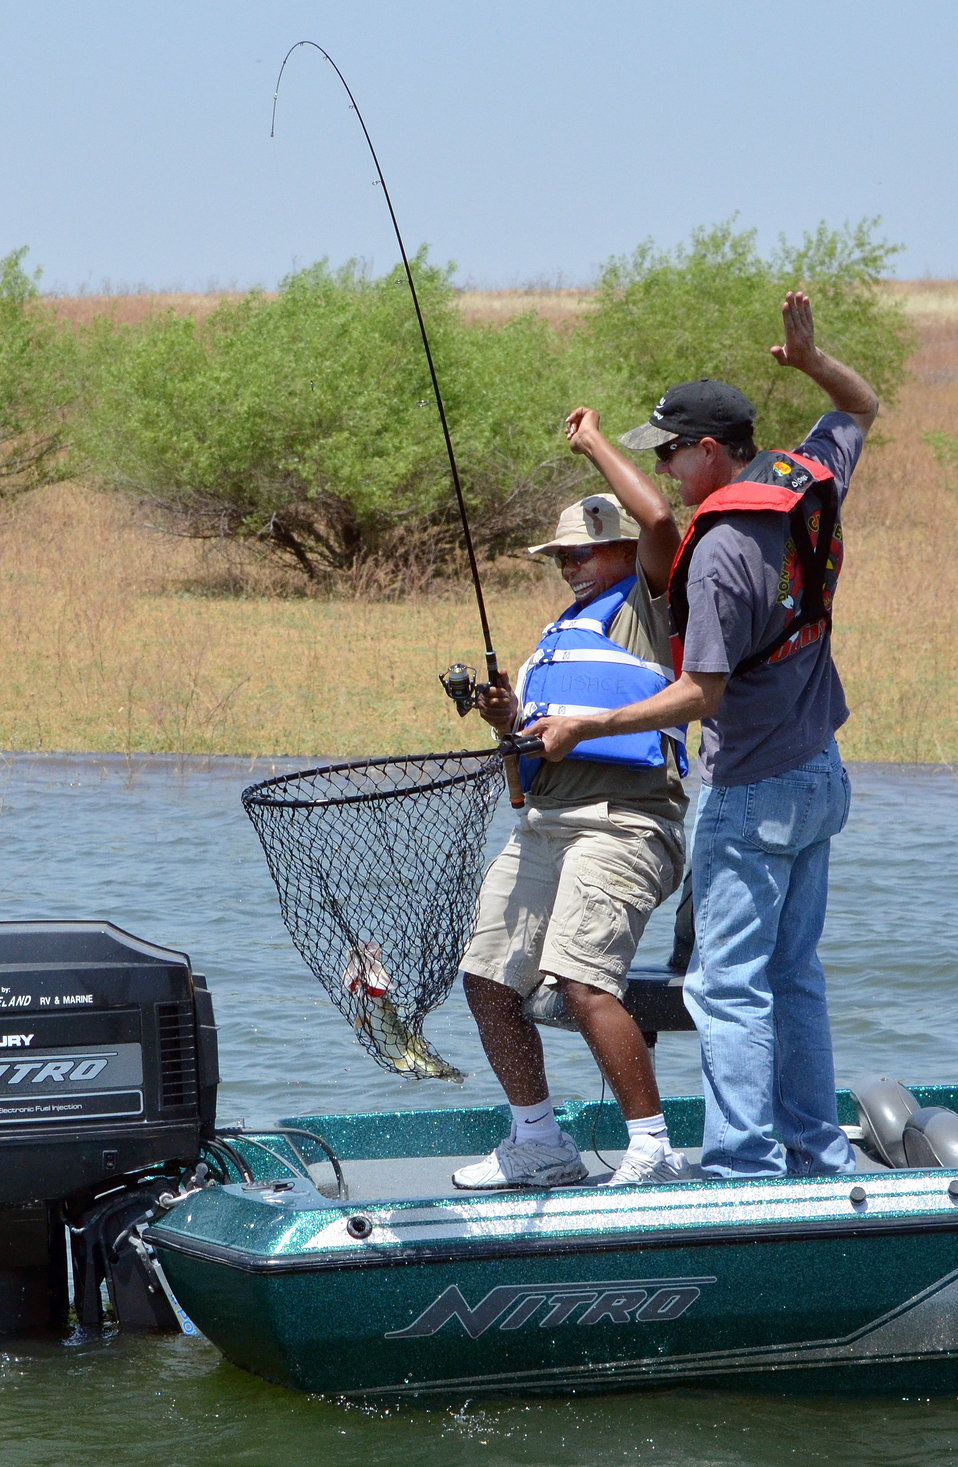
High fives! (“Take a Warrior Fishing” event at Success Lake)

Wounded warriors and their families enjoy a day fishing during the 'Take a Warrior Fishing' event at Success Lake, located near Porterville, Calif., May 4, 2013. This is the second year the U.S. Army Corps of Engineers Sacramento District has hosted the event. Photo cropped for emphasis.